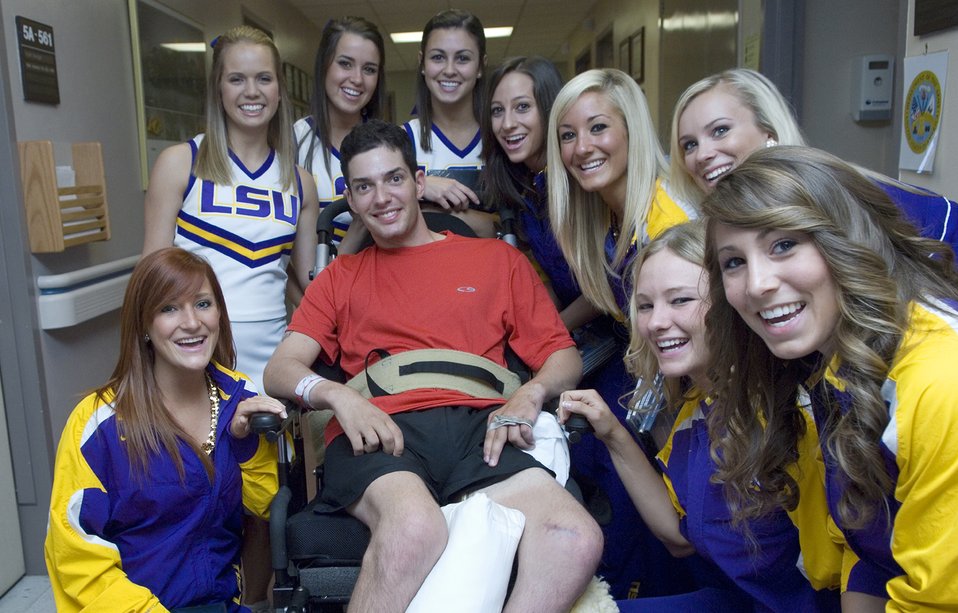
General leads morale tour at Tampa VA hospital

Members of the Louisiana State University Tigers dance team and cheerleading squad put a smile on the face of Army Sgt. Mark Lalli April 5 at the James A. Haley Veterans' Hospital in Tampa, Fla. The Lady Tigers made a special visit to lift the spirits of patients. LSU, along with cheer and dance squads from the other three 2008 Women's Final Four teams, spent the afternoon sharing smiles and stories with retired and active duty members and their families.